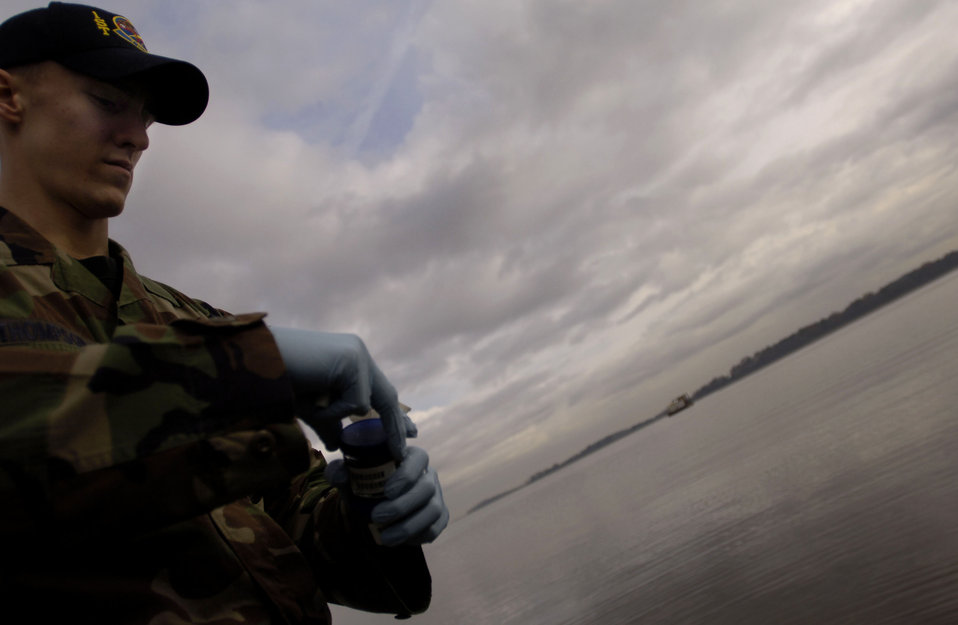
In case of emergency ...

Airman 1st Class Thomas Thompson takes soil and water samples during an Oil Spill Response Exercise Nov. 29 at Langley Air Force Base, Va. The oil spill exercise was designed to test the reaction and response times as well as recovery process of Langley AFB members if an environmental mishap were to take place on the installation. Airman Thompson is a 1st Aerospace Medical Squadron Bioenvironmental engineer.